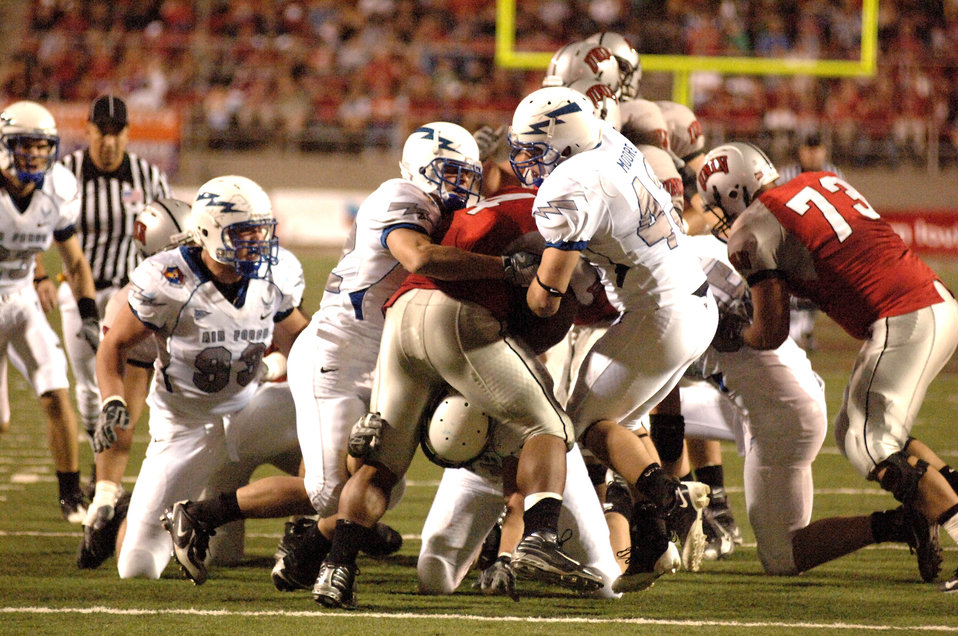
Football: Falcons win thriller in desert 29-28

U.S. Air Force Academy defenders Hunter Altman (left), Ryan Kemp (bottom) and Justin Moore (right), combine to stuff the hole with University of Nevada, Las Vegas tailback Frank Summers Oct. 18 in Las Vegas. The Falcons won 29-28 and improved to 5-2 on the season and 3-1 in the Mountain West Conference.